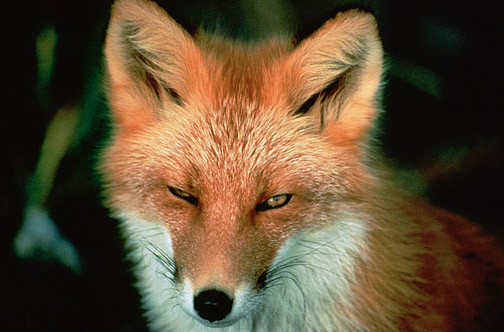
red fox